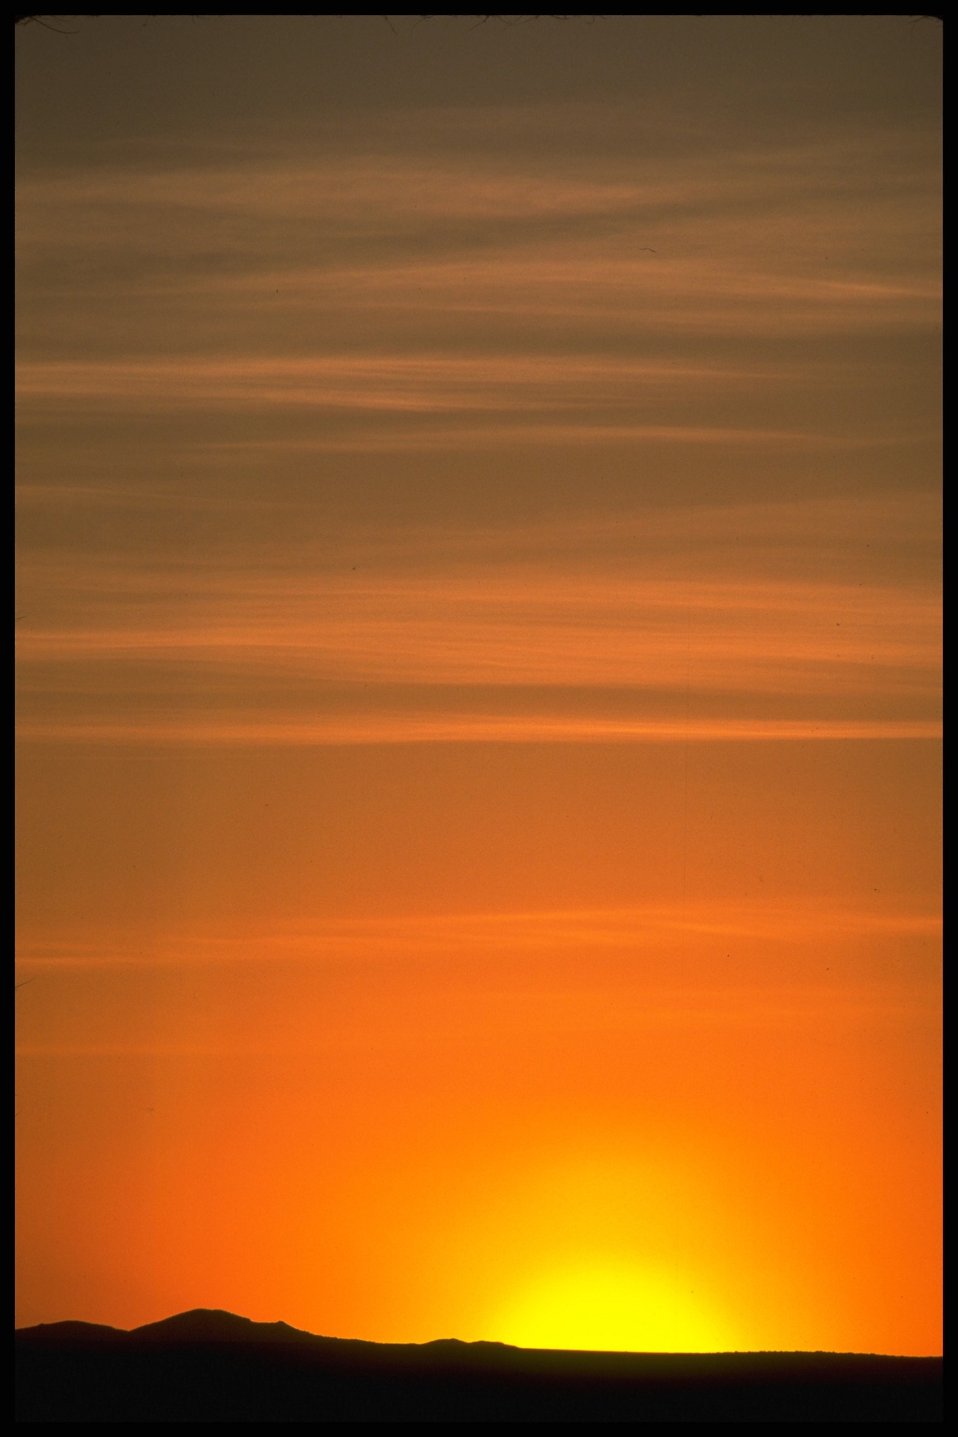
Lakeview District sunrise.